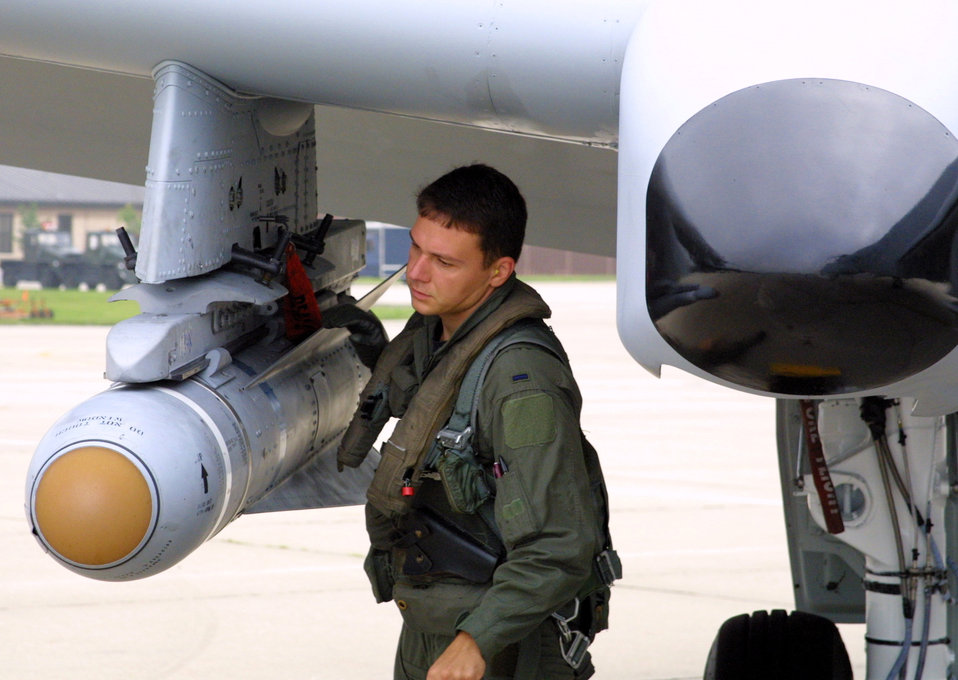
Radoescu

POPE AIR FORCE BASE, N.C. -- First Lt. Nick Radoescu inspects his A-10 Thunderbolt II before a training flight here. He immigrated to America from Romania with his family in 1991. The 25-year-old pilot graduated from the Air Force Academy in 2001.